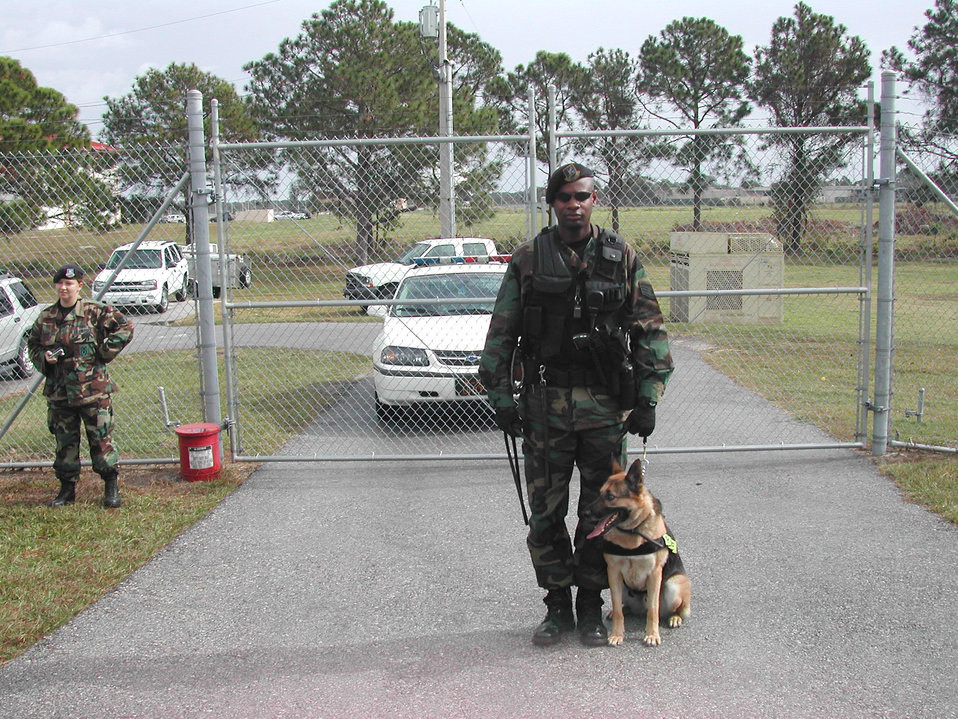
Serving through the season: Staff Sgt. Mario Williams

Staff Sgt. Mario Williams, a military working dog handler with the 6th Security Forces Squadron at MacDill Air Force Base, Fla., will spend Christmas patrolling the base with his German Sheppard, Jago.